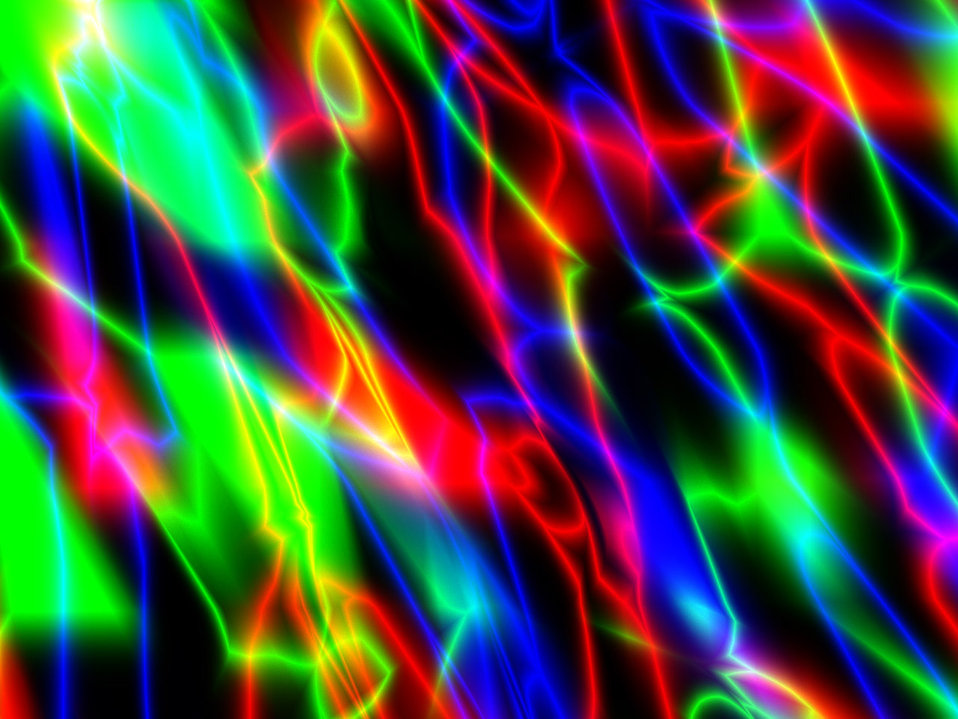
Neon nights

Neons blurred at night.